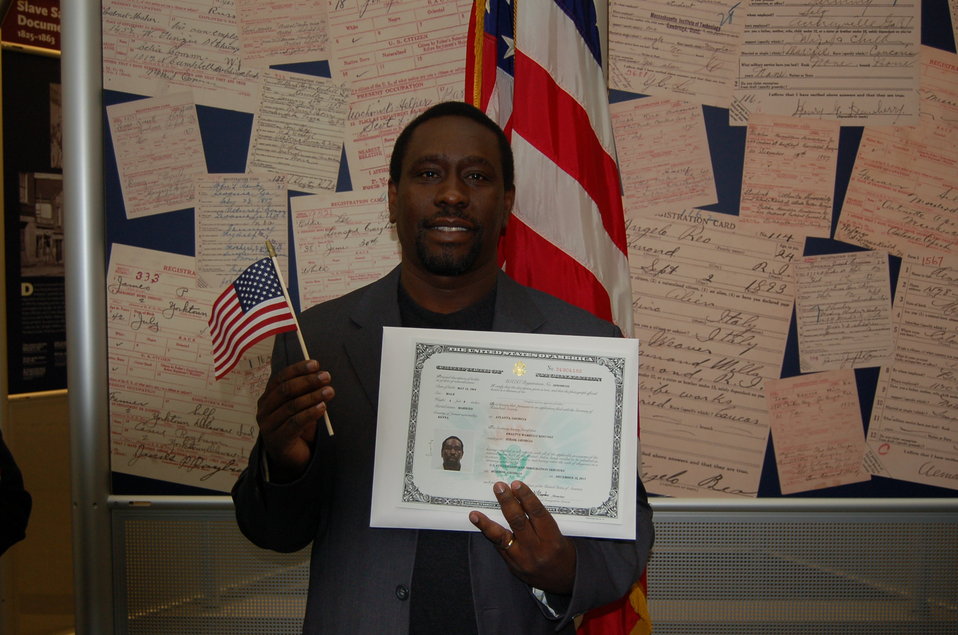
New Citizens